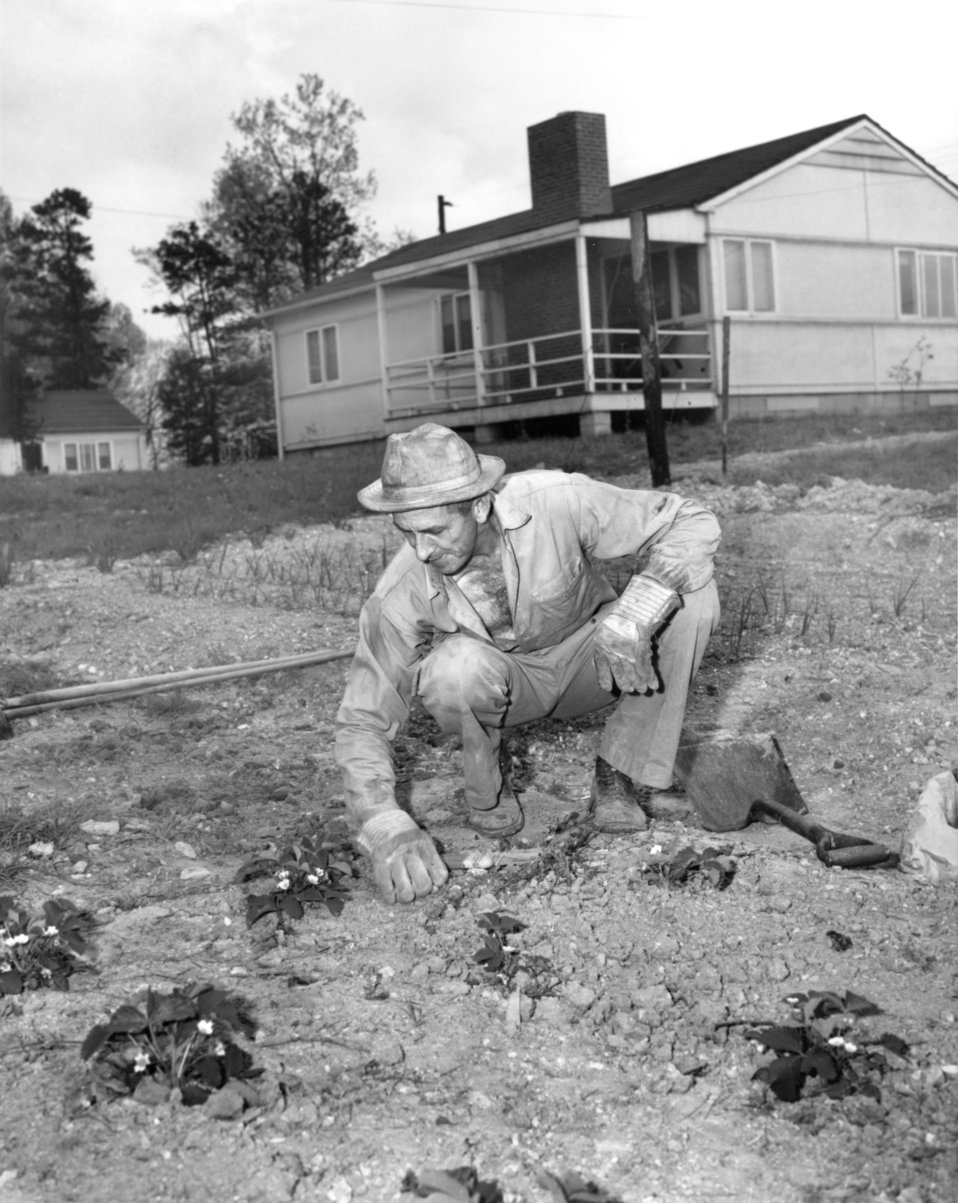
Victory Garden 1945 Oak Ridge

pro416 DOE photo Ed Westcott 3-1945 Oak Ridge Tennessee